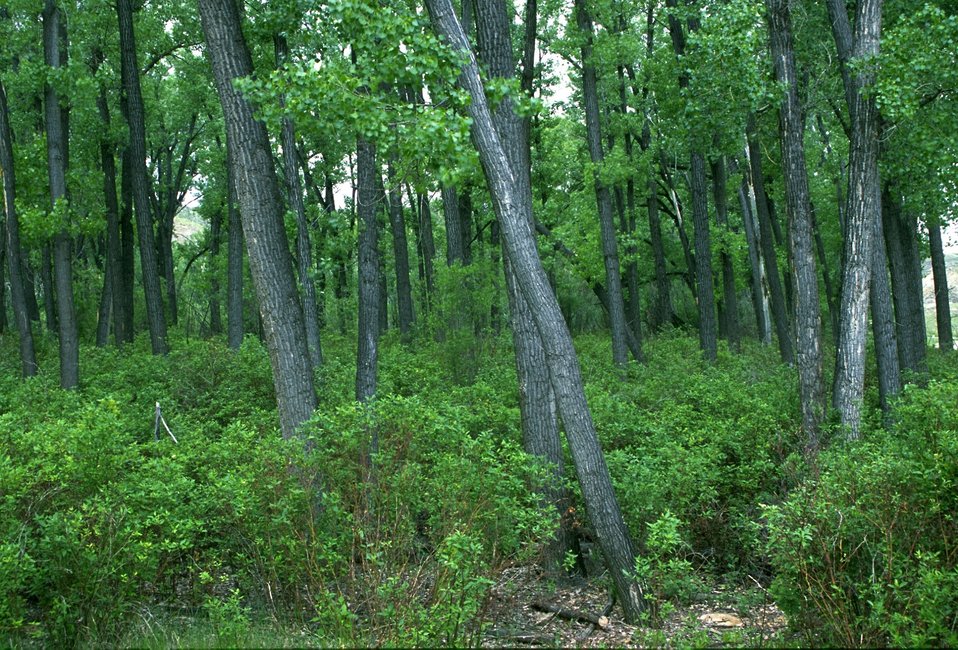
Riparian zone vegetation